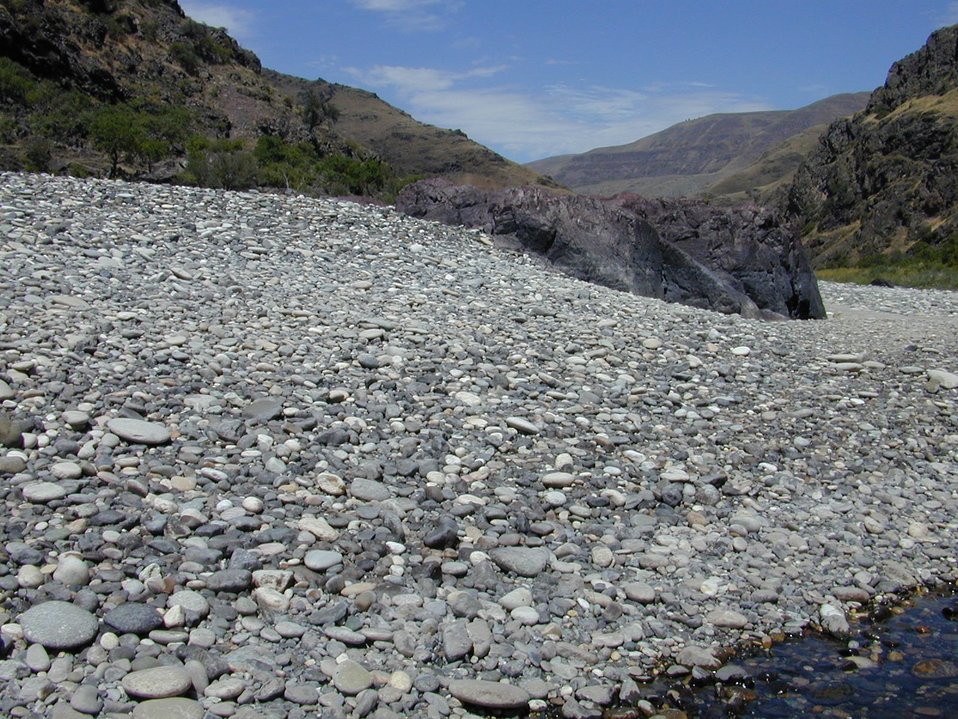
Rock imbrication along the Lower Salmon River Cottonwood Field Office UCSC Upper Columbia Salmon Clearwater District